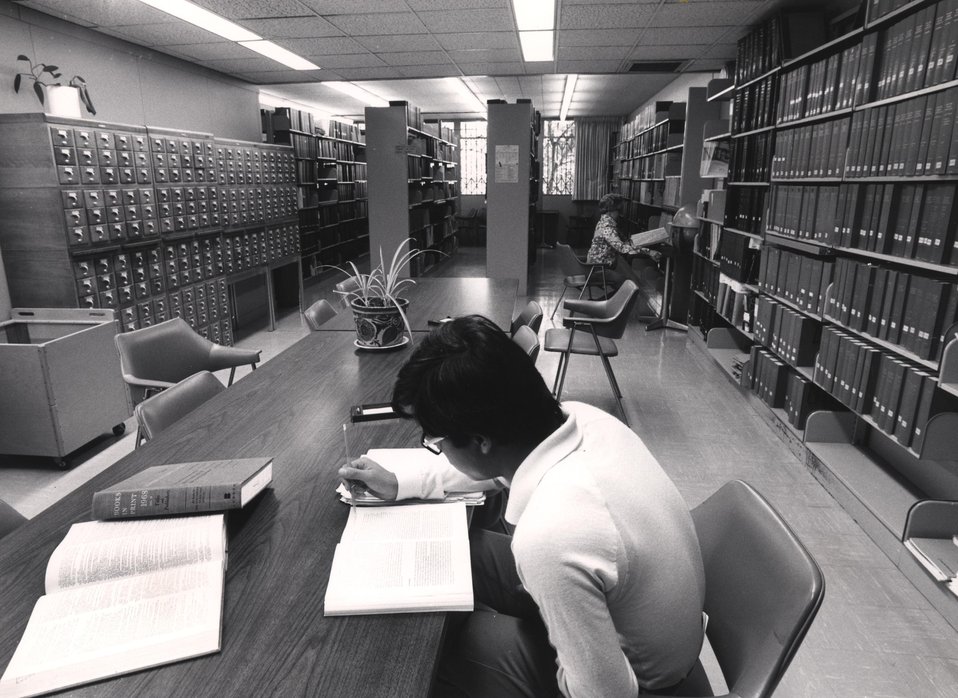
Library of Nuclear Medicine and Radiation Biology, located near other UCLA campus libraries.